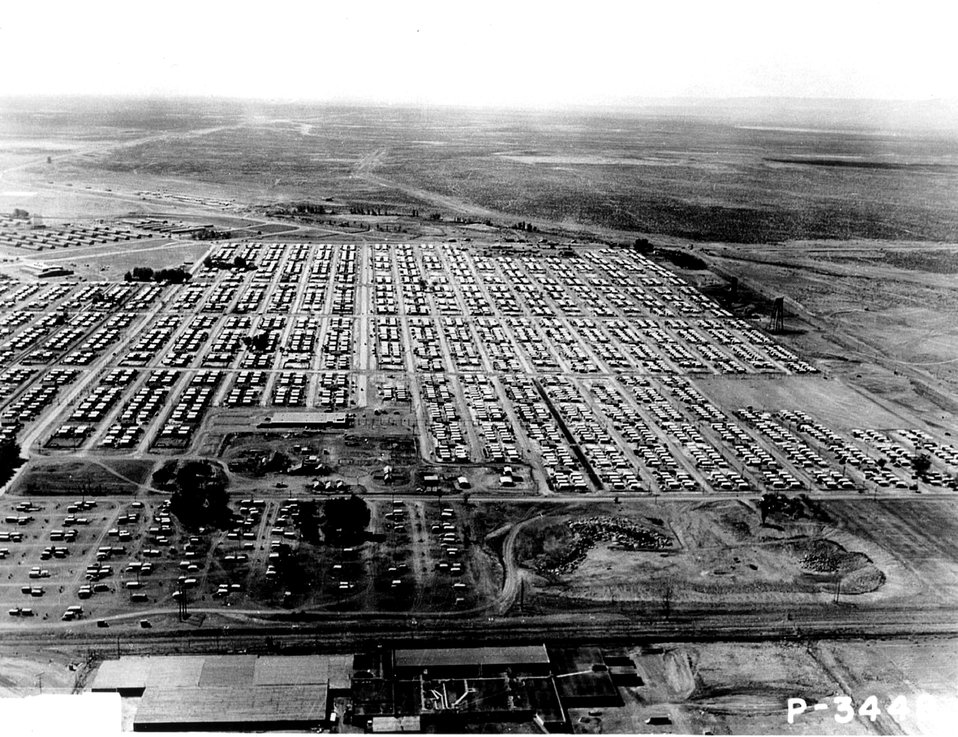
Some of the construction workers lived with their families in travel trailers. This photo is an overhead view of the trailer park at Hanford townsite. The structures that are shown are wood canopies built over the trailers to shield them from the weather. c. undated